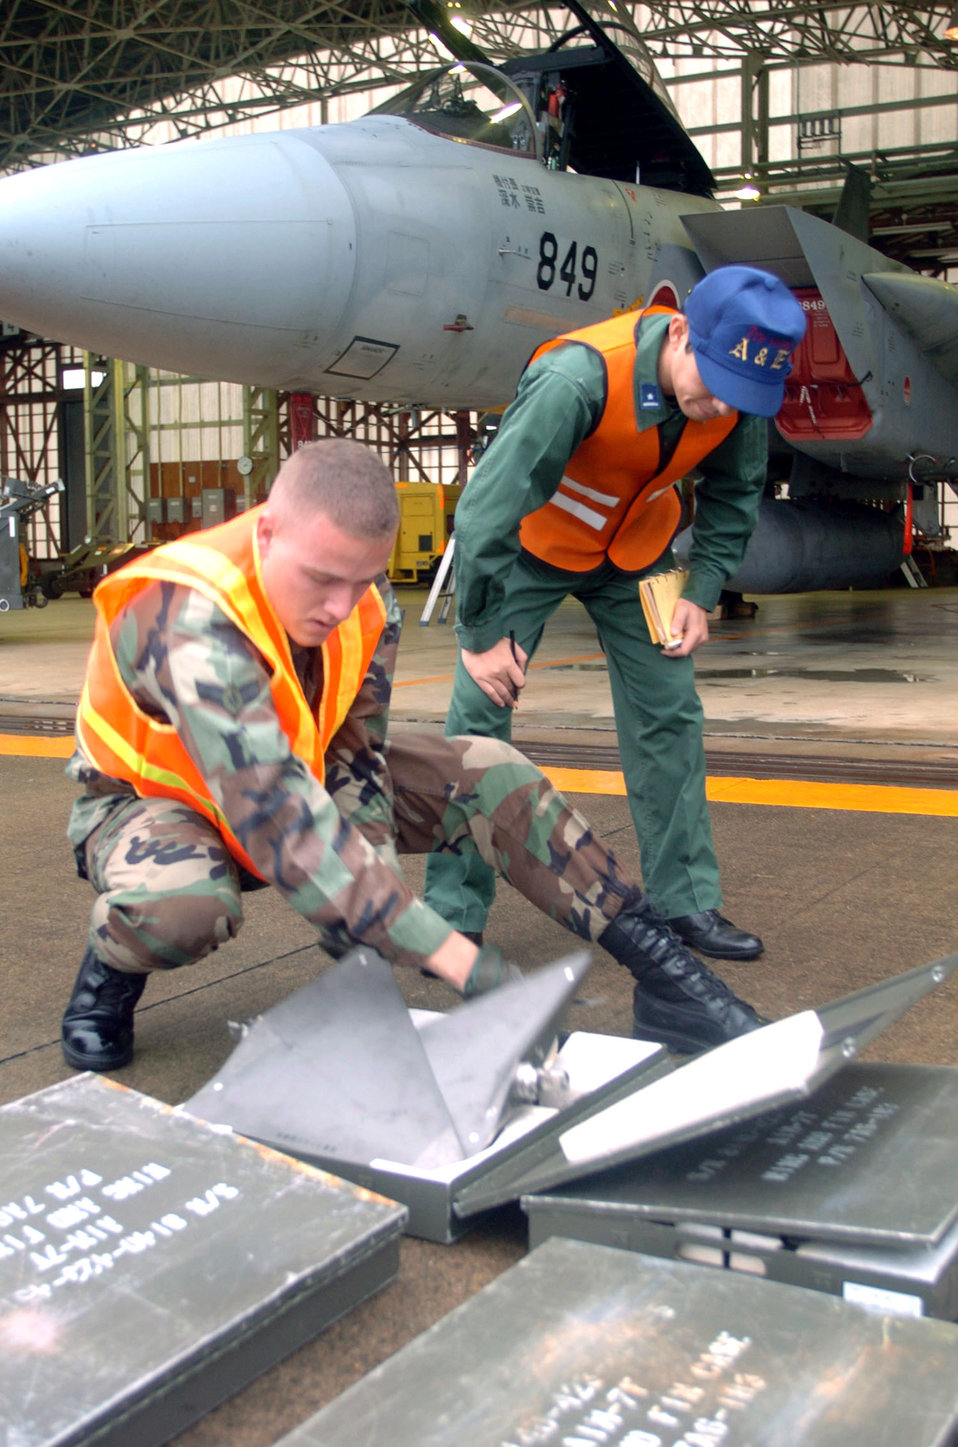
U.S., Japanese forces conduct weapons familiarization training

HYAKURI AIR BASE, Japan -- Airman 1st Class Brian Gates (left) prepares to load an AIM-7 Sparrow on a Japanese F-15 aircraft while Japanese 2nd Lt. Mitsuhiro Kawano watches during turn-around familiarization training involving U.S. and Japanese forces. The training is part of Keen Sword 2005, a defensive readiness exercise. Airman Gates is an aircraft armament systems specialist from the 18th Maintenance Group at Kadena Air Base, Japan.